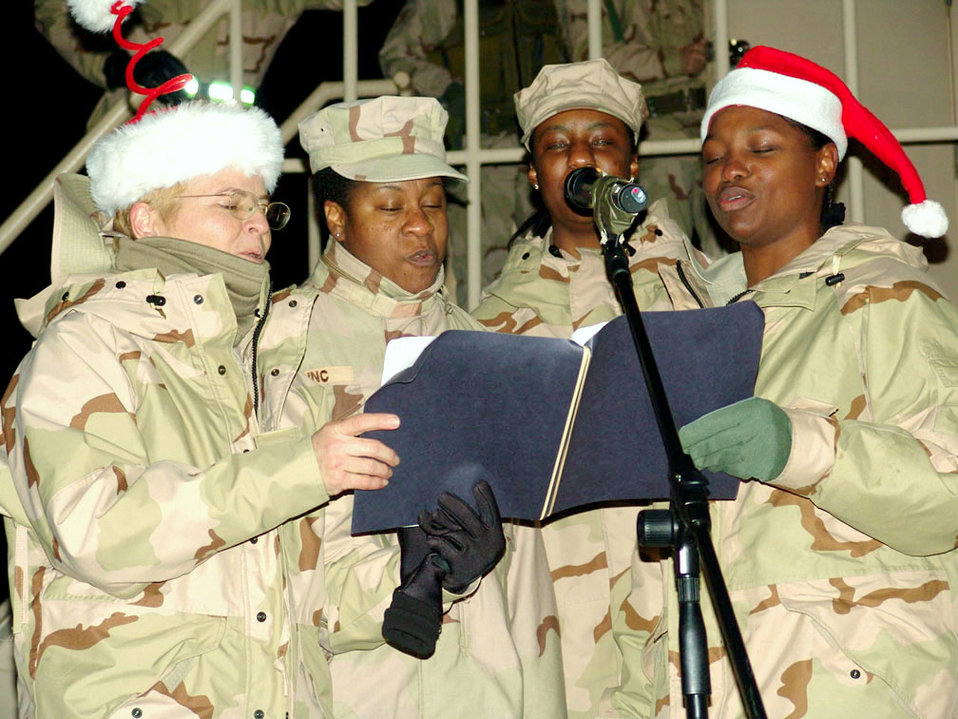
Sing a song

SOUTHWEST ASIA -- Members of the gospel choir at a forward-deployed location sing carols during a tree-lighting ceremony. They are (from left) Maj. Rosemary Hudock-Welch, of the 386th Air Expeditionary Wing's contingency aeromedical staging facility; Tech. Sgt. Shirenn Erdinc, of the 386th Expeditionary Logistics Readiness Squadron; and Staff Sgt. Shannon Batson and Tech. Sgt. Jacquetta Smith, of the 386th Expeditionary Services Squadron.